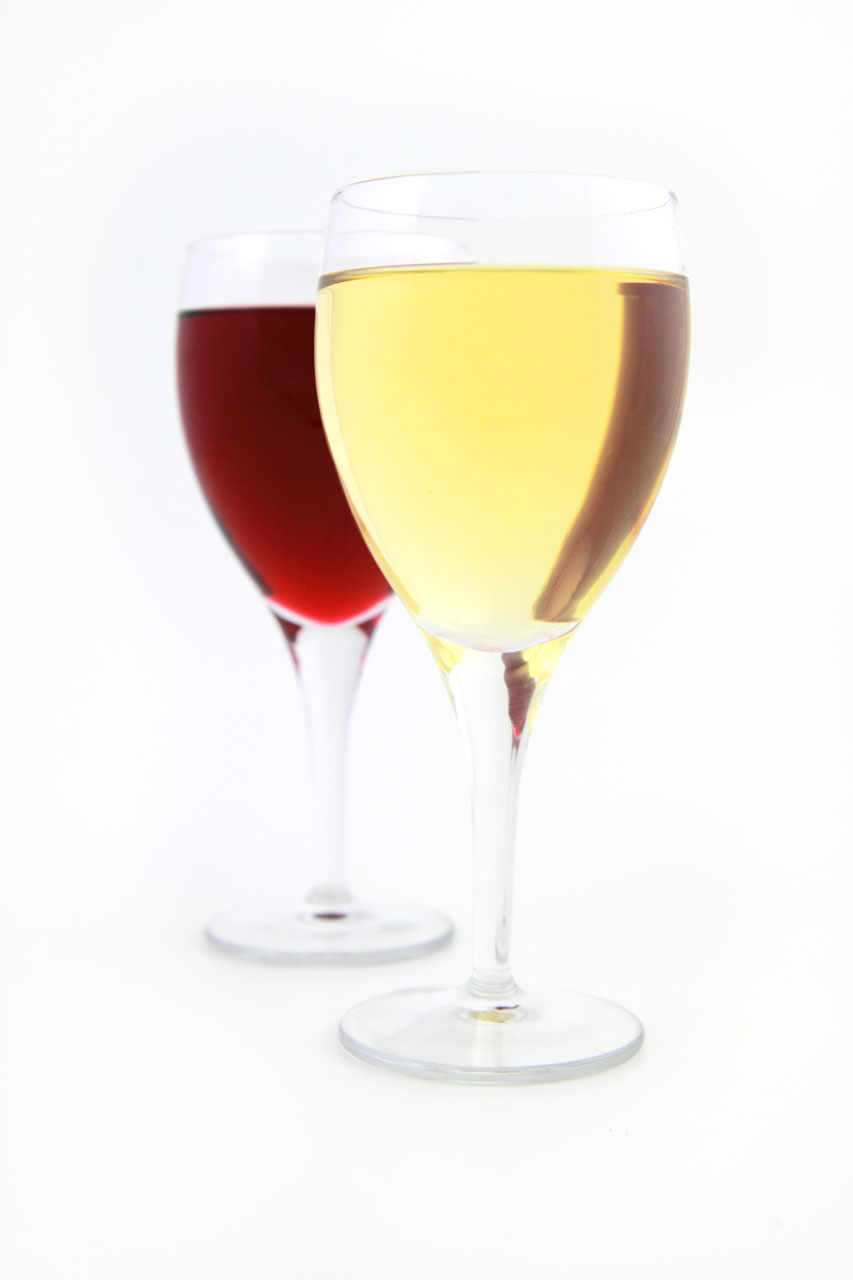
White and red wine glasses on white background.